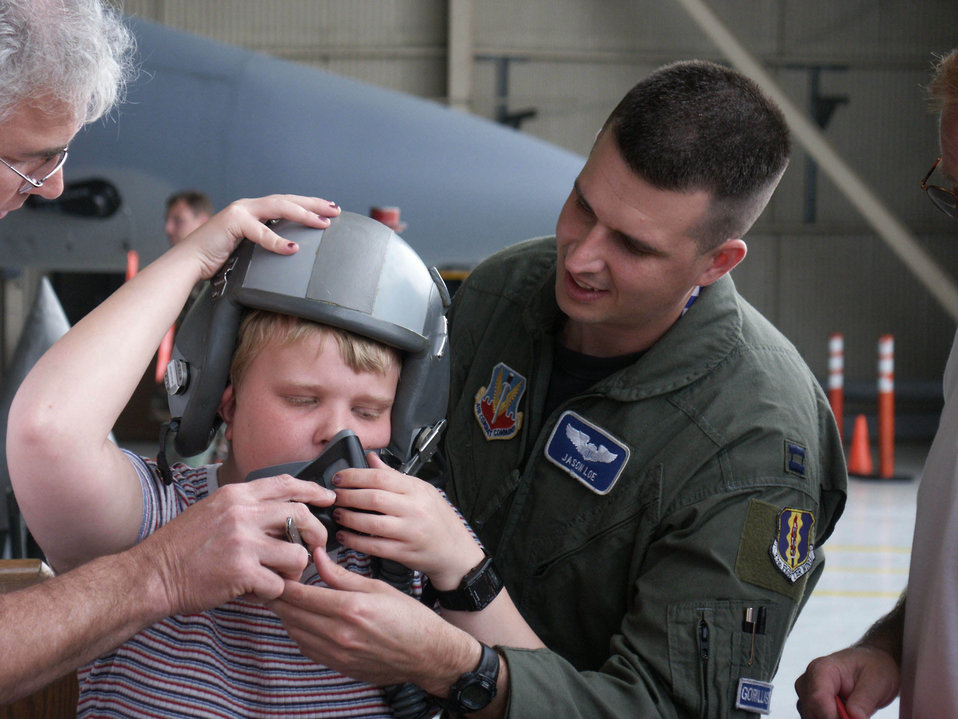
Tour group gets feel for Air Force mission

EGLIN AIR FORCE BASE, Fla. -- Capt. Jason Loe lets Summer Dales try on a helmet during her senior class' tour of the 33rd Fighter Wing here April 26. The class is from the Tennessee School for the Blind in Nashville. Captain Loe is a 58th fighter Squadron F-15 Eagle pilot.